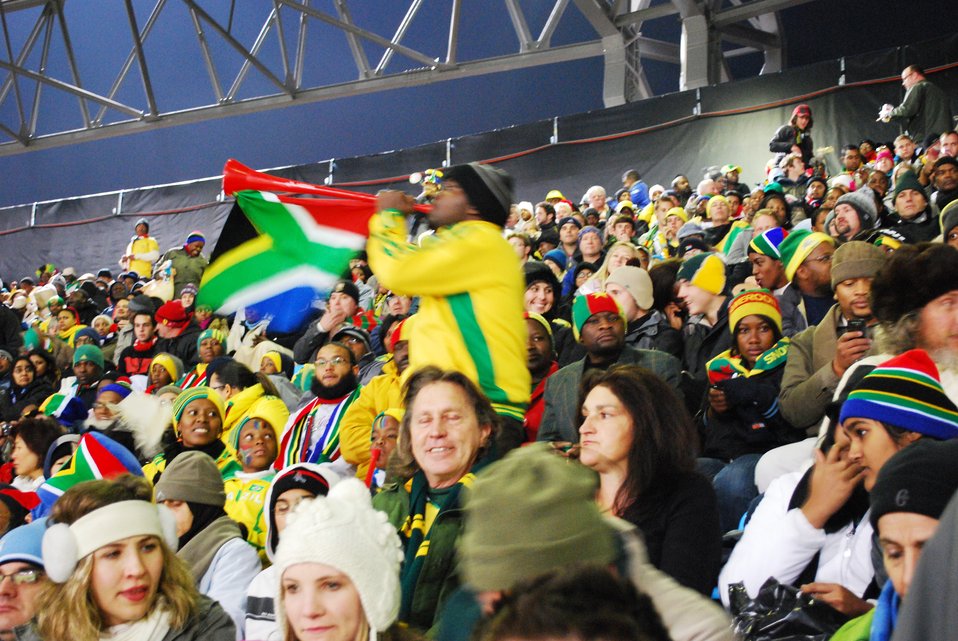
A South African fan plays his vuvuzela at the Denmark vs. Cameroon World Cup match at Loftus Versfeld Stadium in Pretoria, South Africa, on June 19, 2010.